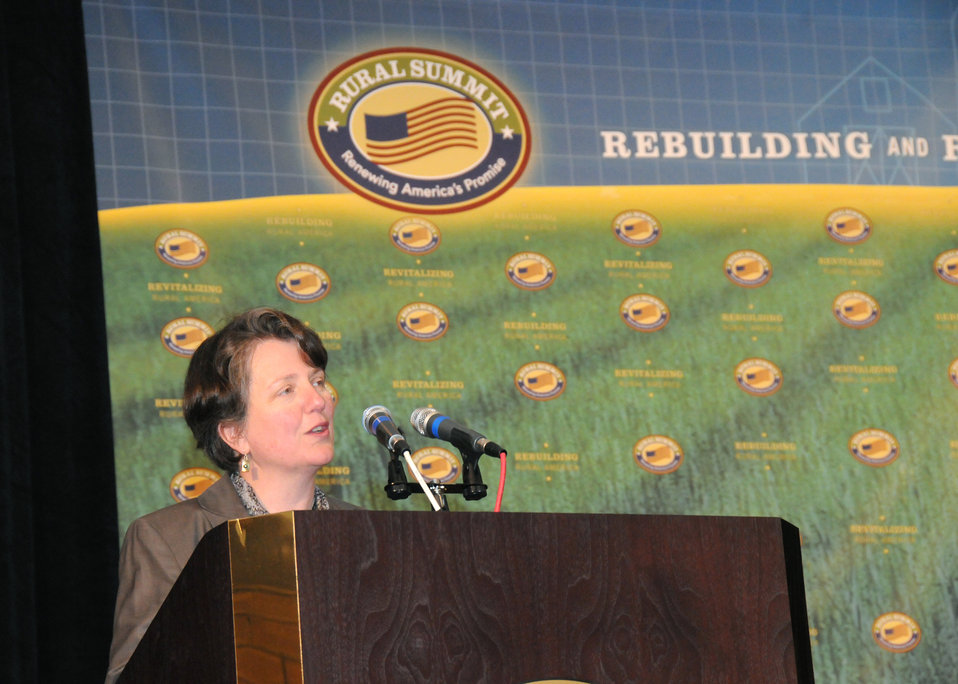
Agriculture Deputy Secretary Kathleen Merrigan speaks at the National Rural Summit held at Jefferson College in Hillsboro, MO., on Thursday, June 3, 2010. USDA photo 10di1387-12